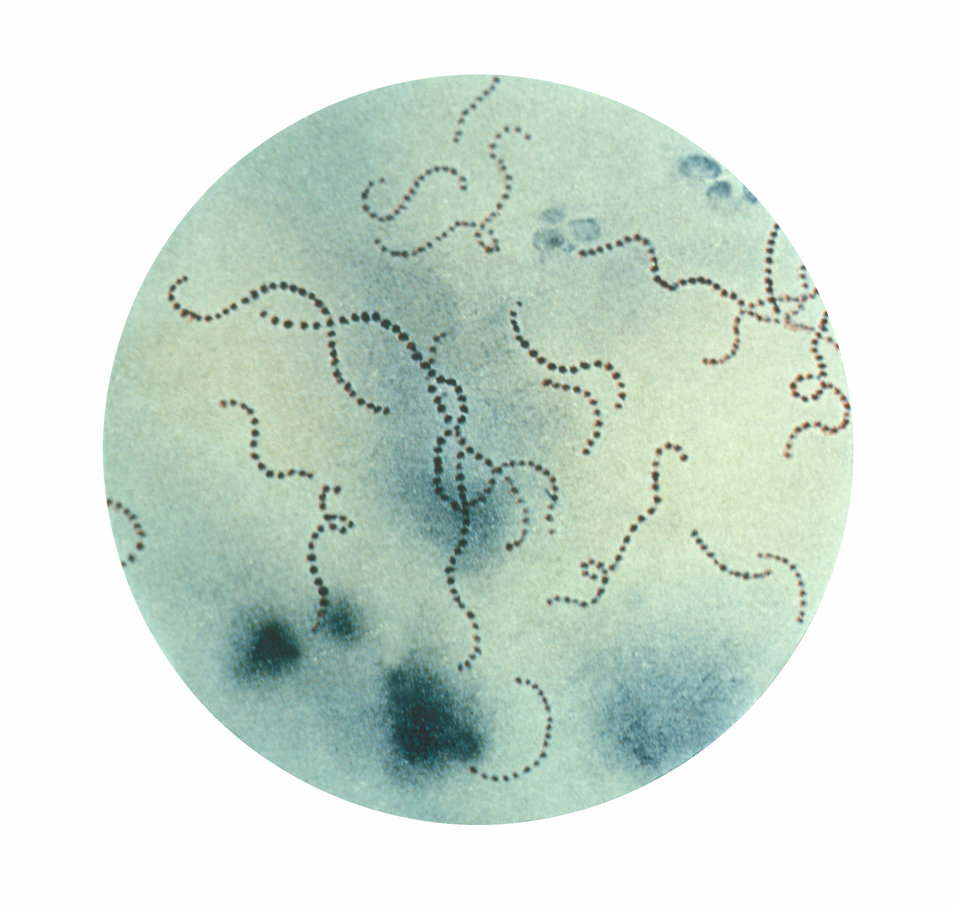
A photomicrograph of Streptococcus pyogenes bacteria.